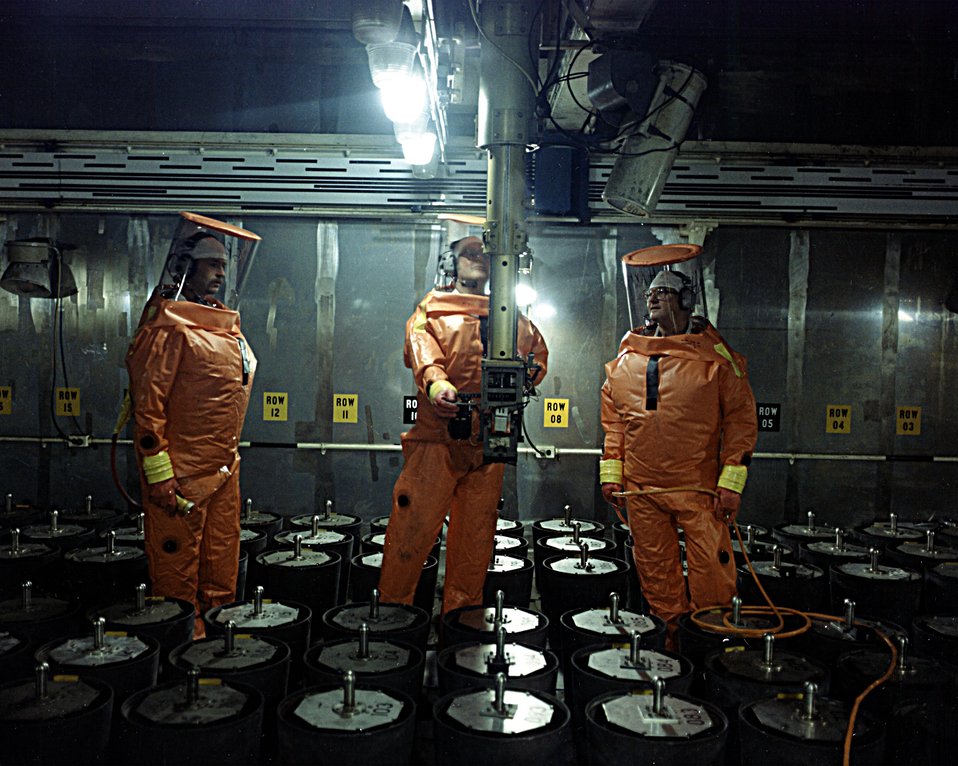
MAINTENANCE WORKERS DRESSED IN SUPPLIED AIRSUITS WORKING ON THE X4 RETRIEVER SYSTEM IN BUILDING 707.

THE ROCKY FLATS PLANT MISSION IS THE NONNUCLEAR MANUFACTURING OF STAINLESS STEEL AND DEPLETED URANIUM PRODUCTS IN SUPPORT OF THE WEAPONS COMPLEX. SUBSEQUENT TO FY 1993, THE PRIMARY MISSION WILL TRANSITION TO ENVIRONMENTAL CLEANUP. CONTINGENCY CAPACITY FOR PLUTONIUM COMPONENT MANUFACTURING WILL BE MAINTAINED. PLUTONIUM PIT PRODUCTION AND SUPPORT OPERATIONS WERE SUSPENDED IN 1989 TO IMPROVE MAINTENANCE, TESTING AND OPERATION OF PLUTONIUM FACILITIES AND TO MAKE SAFETY, ENVIRONMENTAL, AND SECURITY IMPROVEMENTS.